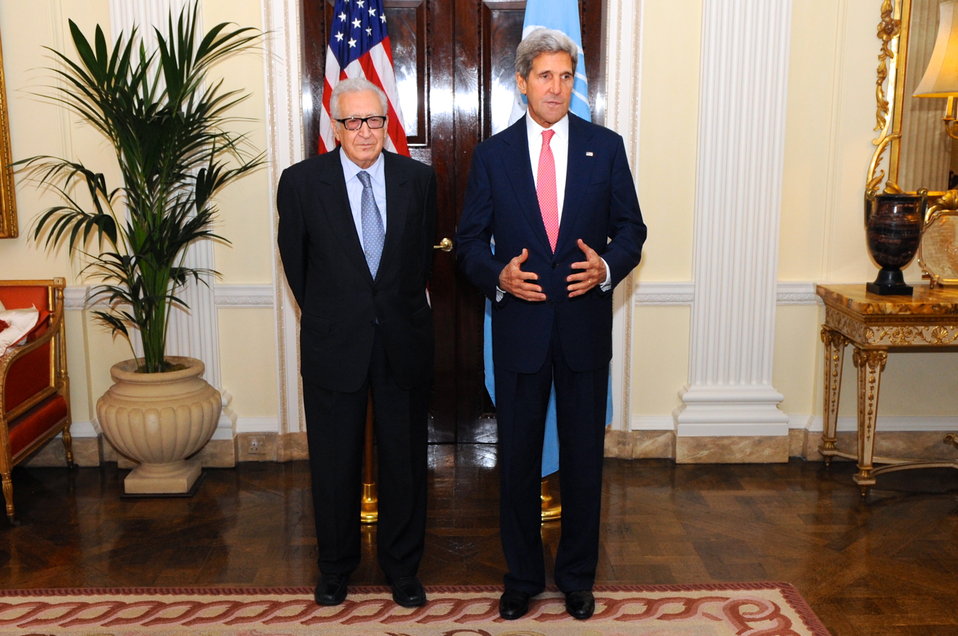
Secretary Kerry, Special Representative Brahimi Speak With Reporters

U.S. Secretary of State John Kerry and Lakhdar Brahimi, the United Nations Special Representative for Syria, address reporters after a meeting at the U.S. Ambassador's Residence in London, United Kingdom, on October 14, 2013. You can view Secretary Kerry's remarks here: www.state.gov/secretary/remarks/2013/10/215364.htm.